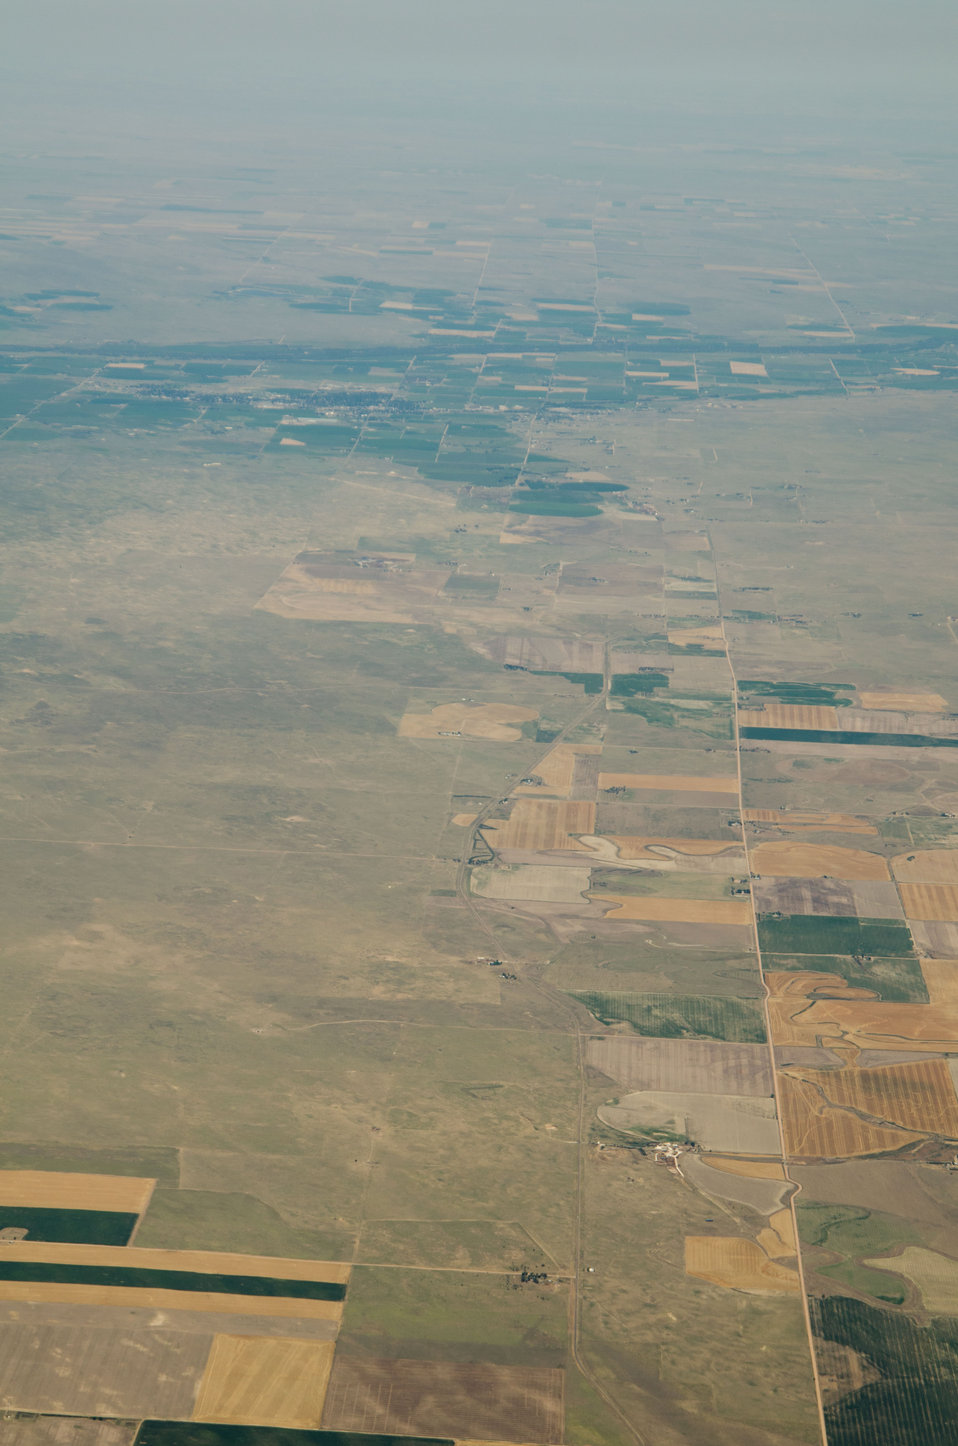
Aerial views of drought affected Colorado farm lands, 16 miles SE of Ft. Morgan, Colorado on Saturday, July 21, 2012. Green areas are irrigated, the yellow areas are dryland wheat crops.